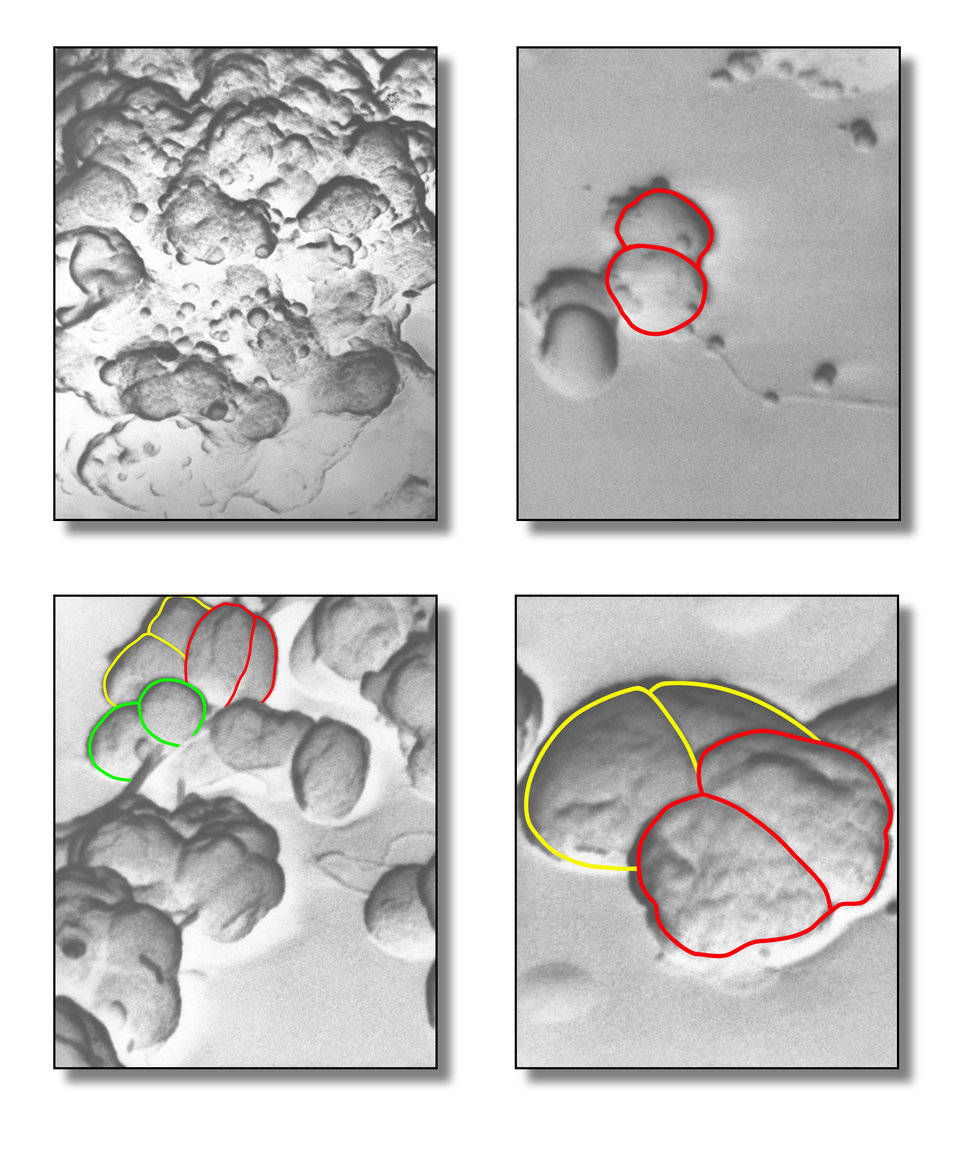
This scanning electron micrograph (SEM) depicted four views of Gram-negative Neisseria gonorrhoeae bacteria. Under this highly-magnified view, details of the protective, adhesive matrix, which this colony had secreted is revealed. This molecular matrix consists of polymeric constituents known as the 'extracellular polymeric substance', or EPS. Typically, these cocci appear as paired diplococci, which have been outlined in color. See PHIL 10248 for a black and white version of this image.